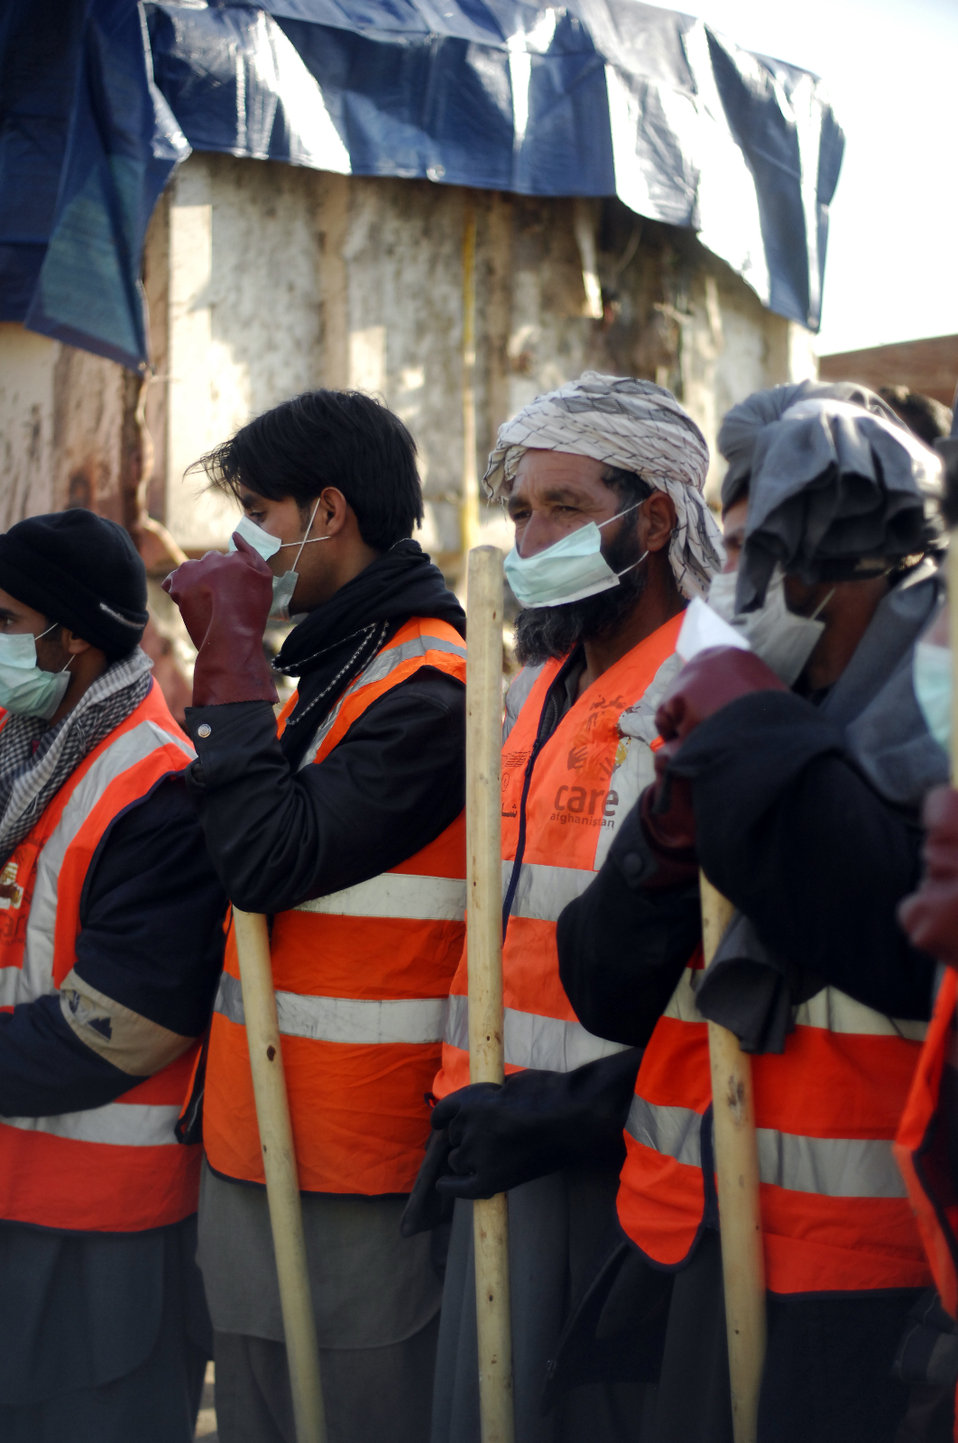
Care03